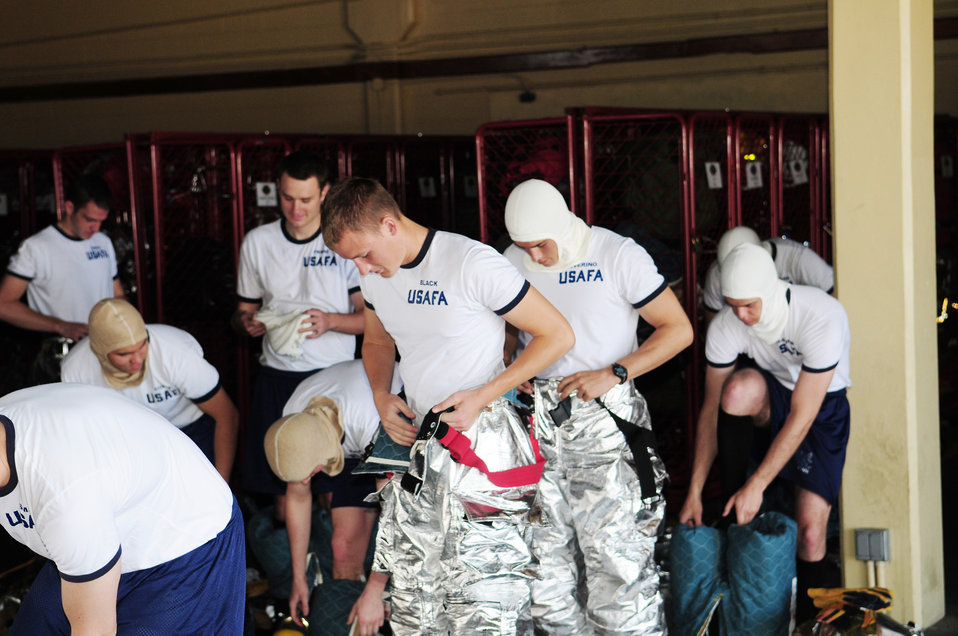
Academy cadets experience operational Air Force

U.S. Air Force Academy cadets climb into their